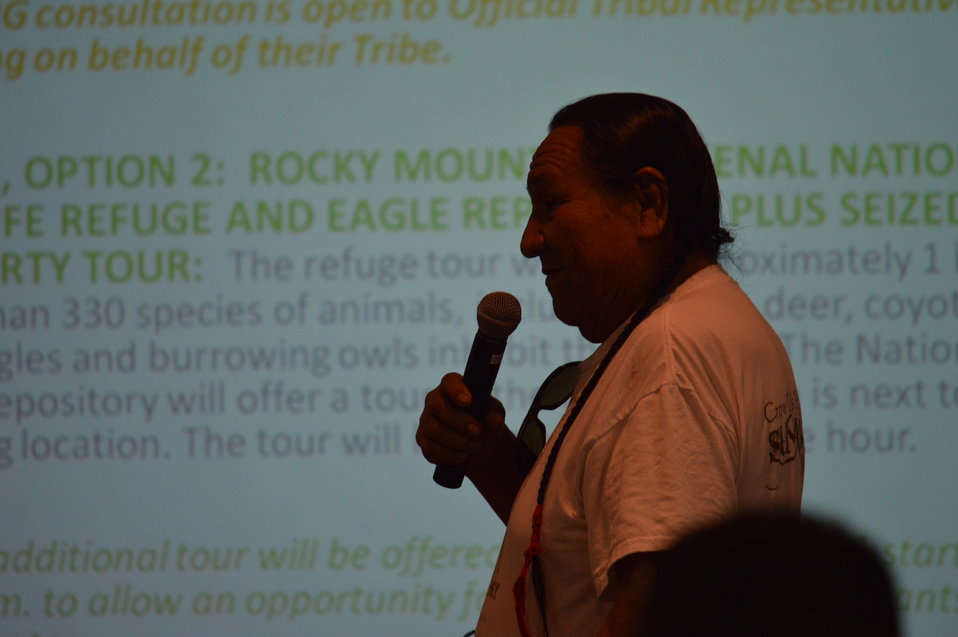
Eagle Summit III in Denver, Colorado on March 20, 2014 at the Rocky Mountain Arsenal National Wildlife Refuge.